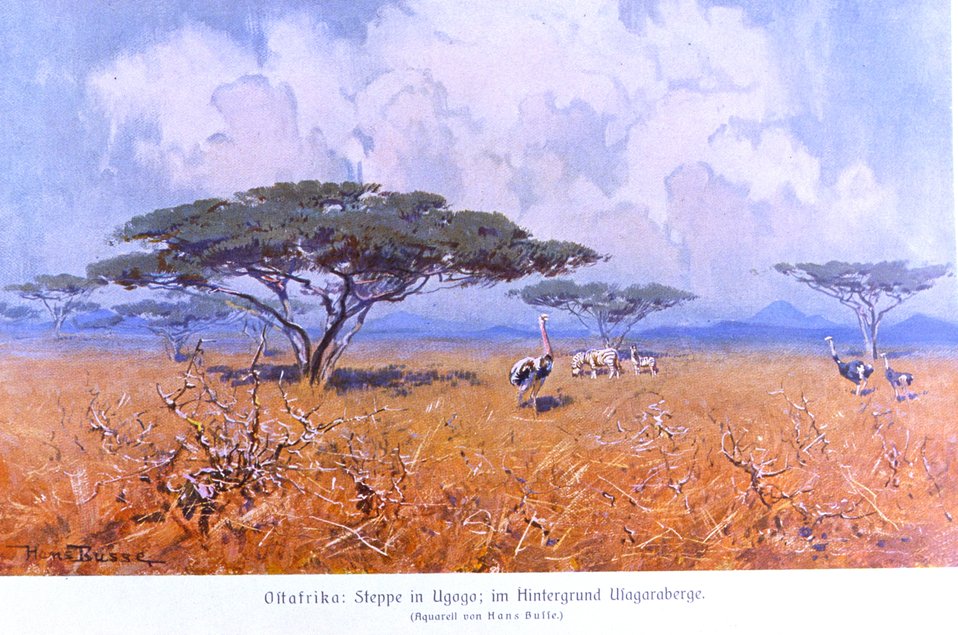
Steppes of German East Africa with ostriches. In: 'Das Deutsche Kolonialreich,' by Hans Meyer, 1909. Vol I, p. 264. Library Call Number: Cfd M612 d